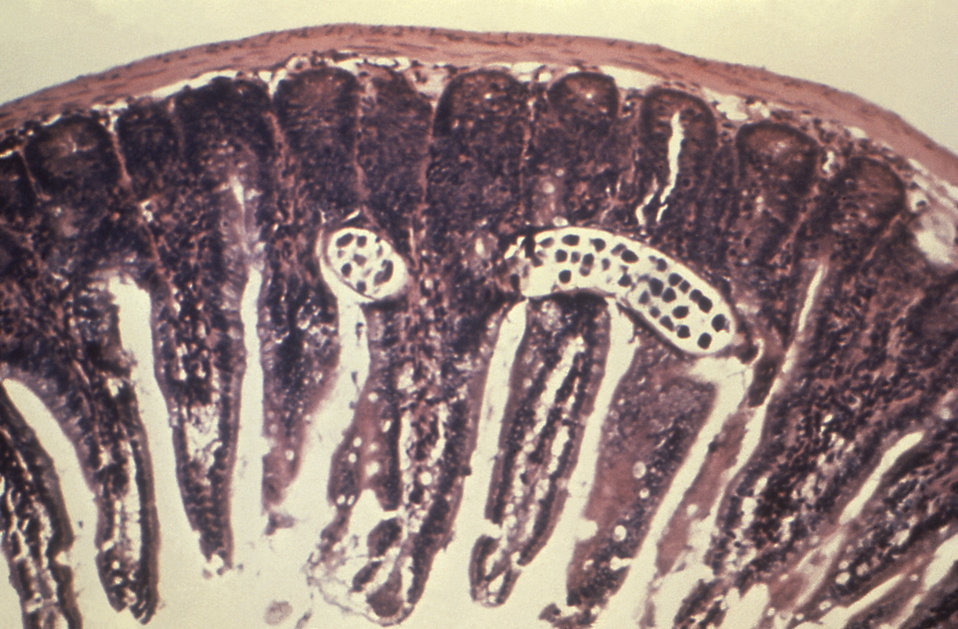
This photomicrograph of an intestinal mucosa tissue specimen revealed the presence of a Trichinella spiralis parasitic nematode, which had burrowed itself into the columnar epithelial intestinal lining.